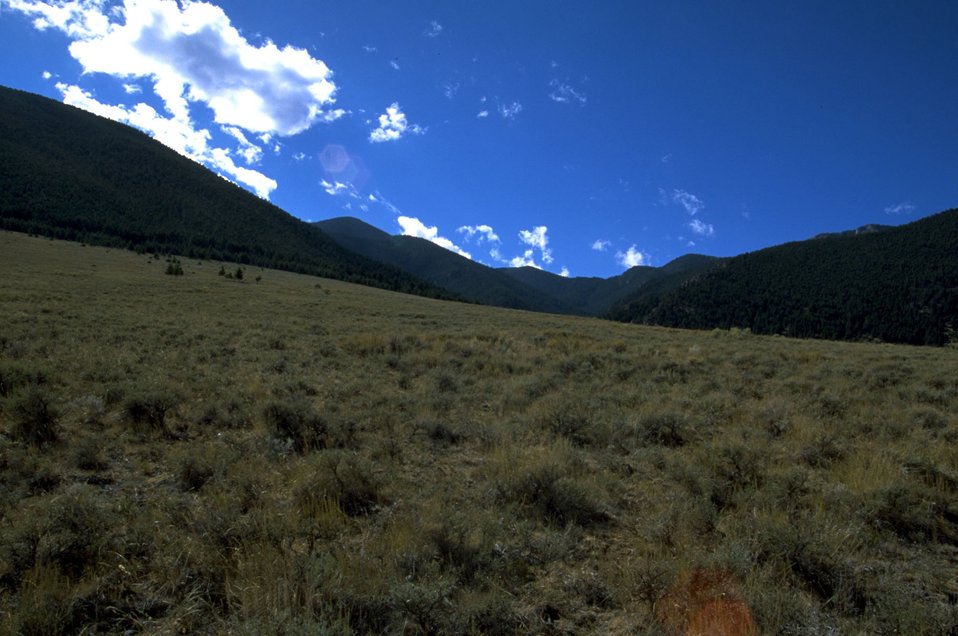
Underexposed mountain scene